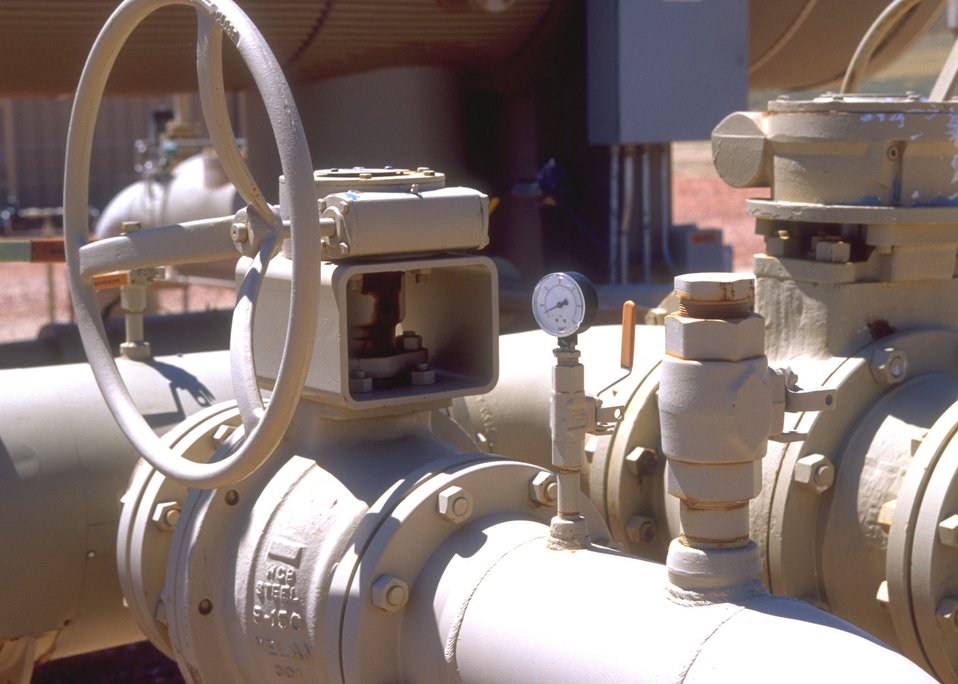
Facilities used in the production of coal bed methane, Buffalo Field Office.